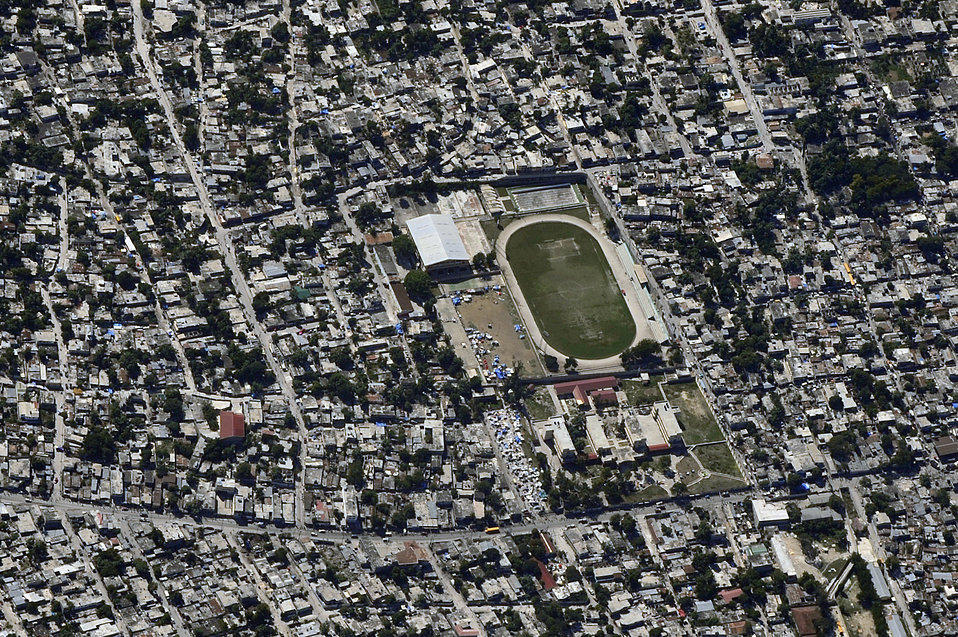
Haiti Observation

An aerial view of Port-au-Prince, Haiti from an OC-135B Observation Aircraft Jan. 14. The OC-135B flew over Haiti for over three hours taking panoramic photos to help coordinate U.S. military support to the Haiti relief effort.